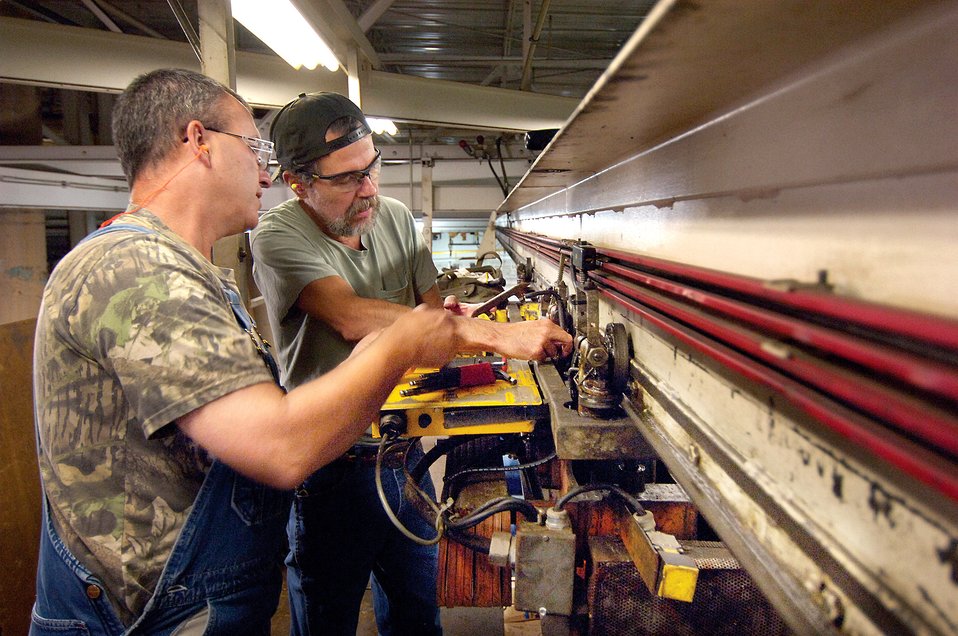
24-hour Tinkering: Maintenance around the clock

Greg White (left) and Robert Eisenbrey repair tools and machines necessary to keep production flowing Oct. 2 at Tinker Air Force Base, Okla. The 76th Maintenance Wing Support Group plant management team work to repair a transporter that lifts and moves parts to several vats of cleaners.